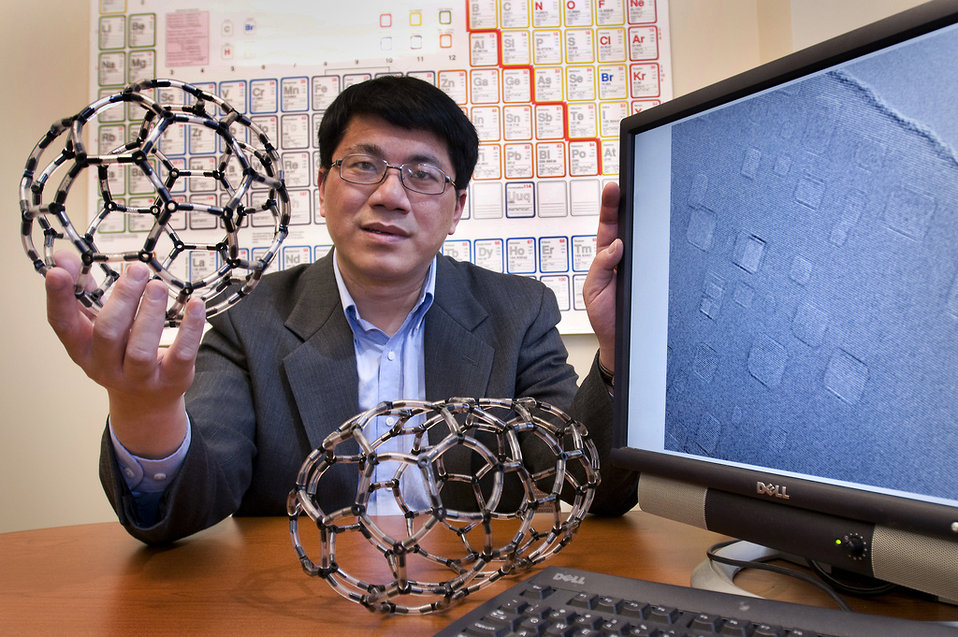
Nanotube, Buckyball model at Brookhaven's Center for Functional Nanomaterials.
The CFN at Brookhaven provides state-of-the-art capabilities for the fabrication and study of nanoscale materials, with an emphasis on atomic-level tailoring to achieve desired properties and functions. The center is a science-based user facility, simultaneously developing strong scientific programs while offering broad access to its capabilities and collaboration through an action user program. The overarching scientific theme of the CFN is the development and understanding of nanoscale materials that address the Nation's challenges in energy security, consistent with the DOE mission.